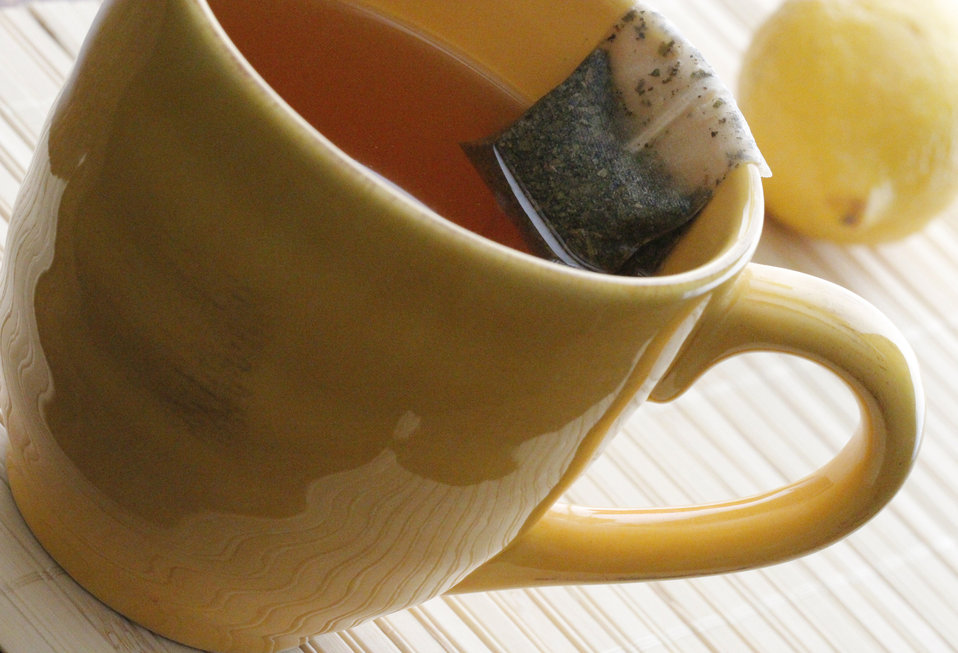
This image depicts a yellow ceramic cup that contained hot water, and resting on its rim was a steeping tea bag. In the background you'll note a lemon, which may be added to this drink, imparting a delightful hint of citrus.